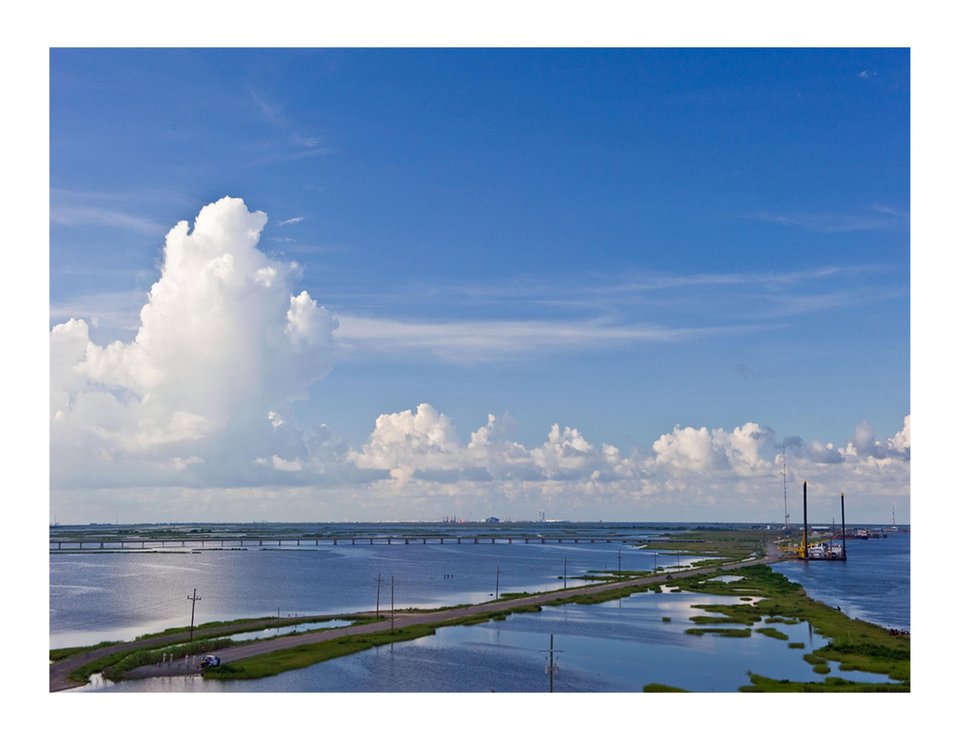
Cloudscape on the horizon, Louisiana